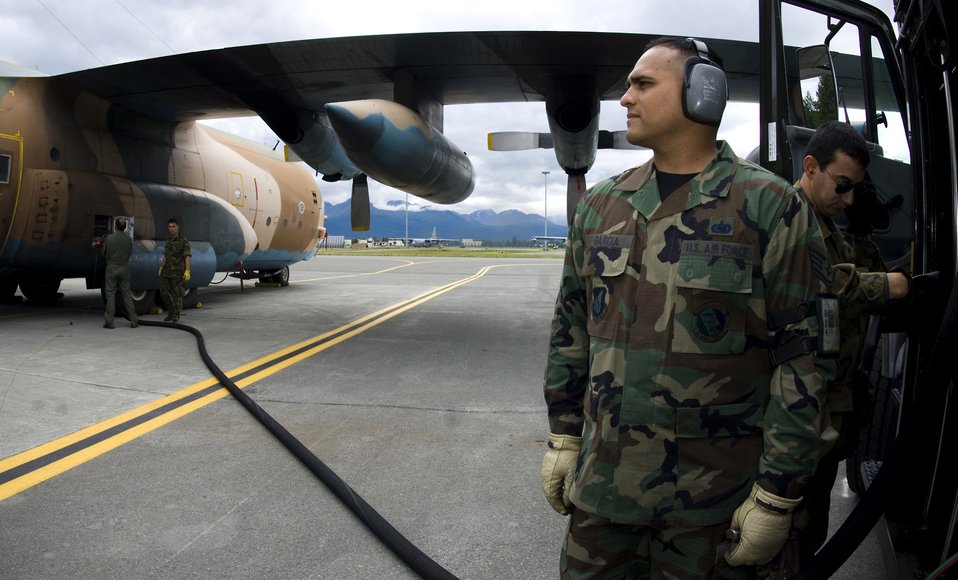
Elmendorf, coalition forces hone skills at Red Flag-Alaska

Staff Sgt. Carlos Garcia helps fuel a C-130 from Spain during Red Flag-Alaska July 23 at Elmendorf Air Force Base, Alaska. Sergeant Garcia, assigned to the 3rd Logistics Readiness Squadron, is an Air Force liaison to the Spanish air force. More than 80 aircraft and 1,500 servicemembers from the six countries are flying together in this multinational exercise that provides realistic combat training in a safe and controlled setting over the Pacific Alaskan Range Complex and Eielson AFB, Alaska.